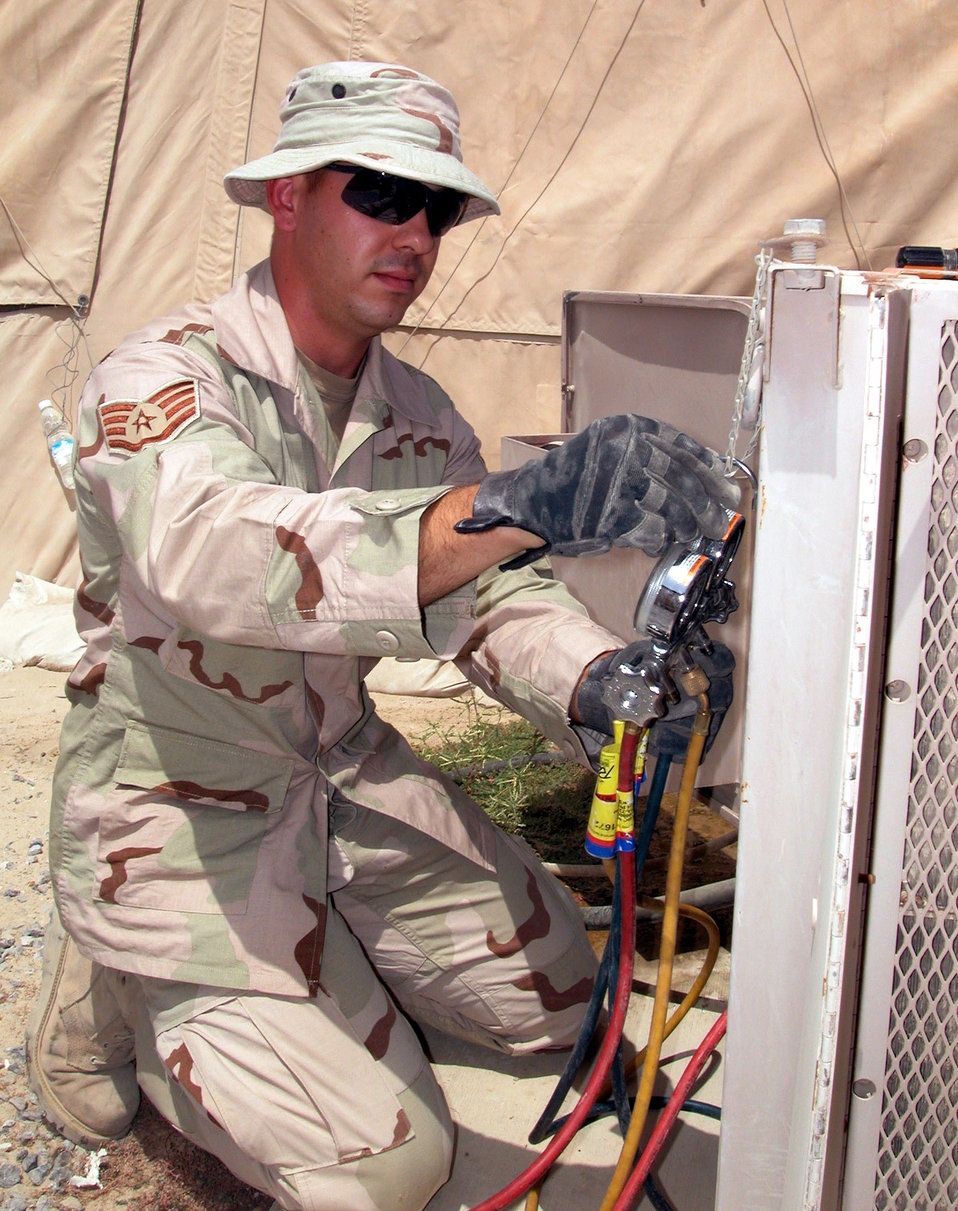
Desert A/C

OPERATION ENDURING FREEDOM -- Staff Sgt. Shane McDaniel services an environmental control unit at a forward-deployed location in Southwest Asia. The air conditioning provided by units keeps tents at comfortable temperatures. McDaniel is a heating, ventilation and air-conditioning journeyman with the 380th Expeditionary Civil Engineer Squadron. He is deployed from the 9th Civil Engineer Squadron at Beale Air Force Base, Calif.